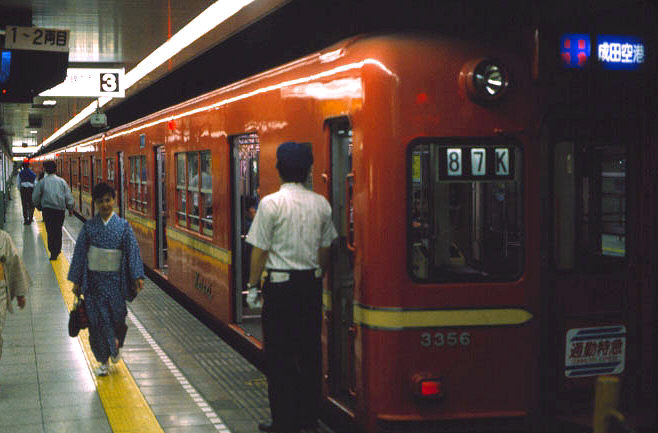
Tokyo subway platform and train.